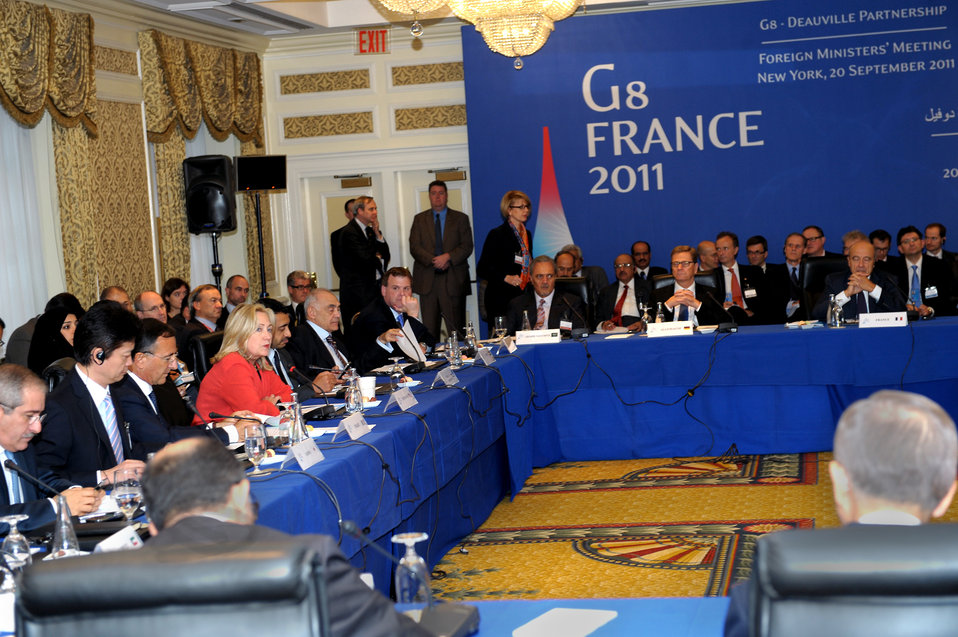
Secretary Clinton Participates in the G8 Deauville Partnership Meeting

U.S. Secretary of State Hillary Rodham Clinton participates in the G8 Deauville Partnership Meeting at the InterContinental Hotel in New York, New York, on September 20, 2011.